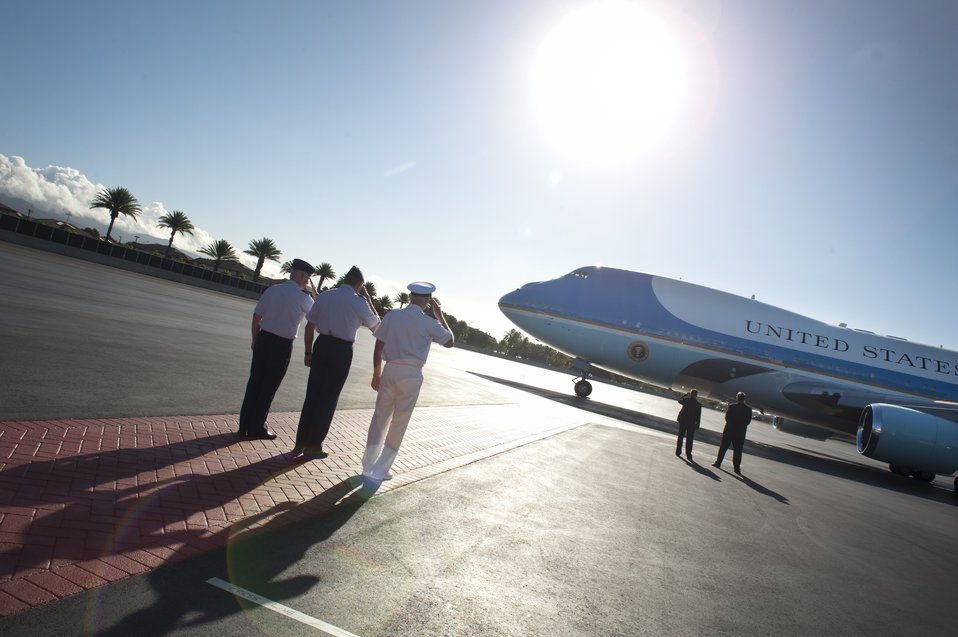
President Obama meets with Hickam Airmen

Adm. Robert Willard, (right) the U.S. Pacific Command commander, Gen. Gary North, (middle) the Pacific Air Forces commander, and Col. Sam Barrett, the 15th Wing commander, render a salute as Air Force One taxis for departure from Joint Base Pearl Harbor-Hickam, Hawaii, Nov. 15, 2011. President Obama was in Hawaii for the Asia-Pacific Economic Cooperation conference.